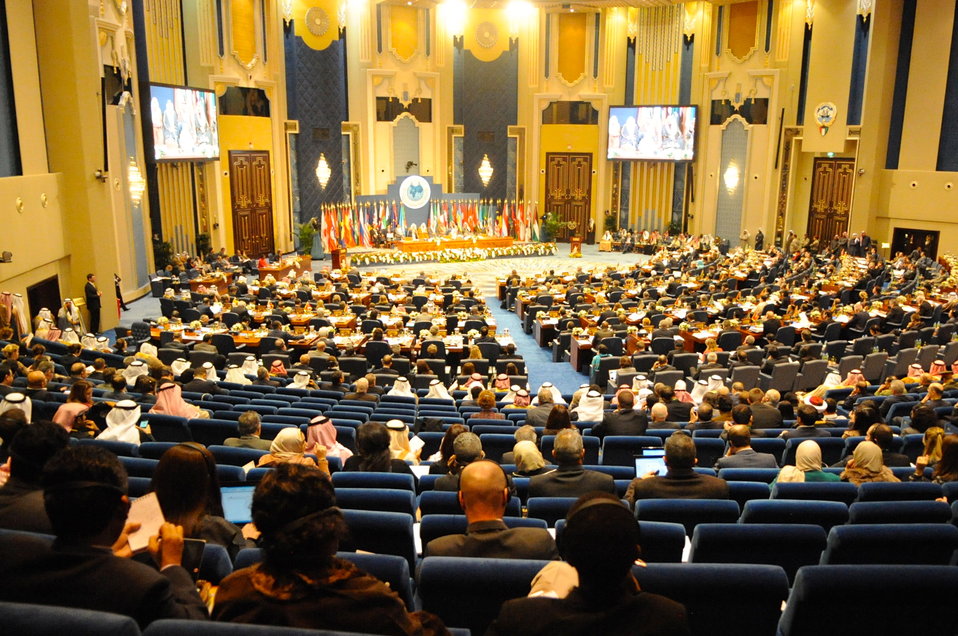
Syrian Donors' Conference in Kuwait Kicks Off With Pledge of $500 Million

Foreign ministers and other government officials take turns speaking at the Syrian Donors' Conference in Kuwait City, Kuwait, on January 15, 2014, which Amir Sheikh Sabah al-Ahmed Al Sabah of Kuwait kicked off with a pledge of $500 million.